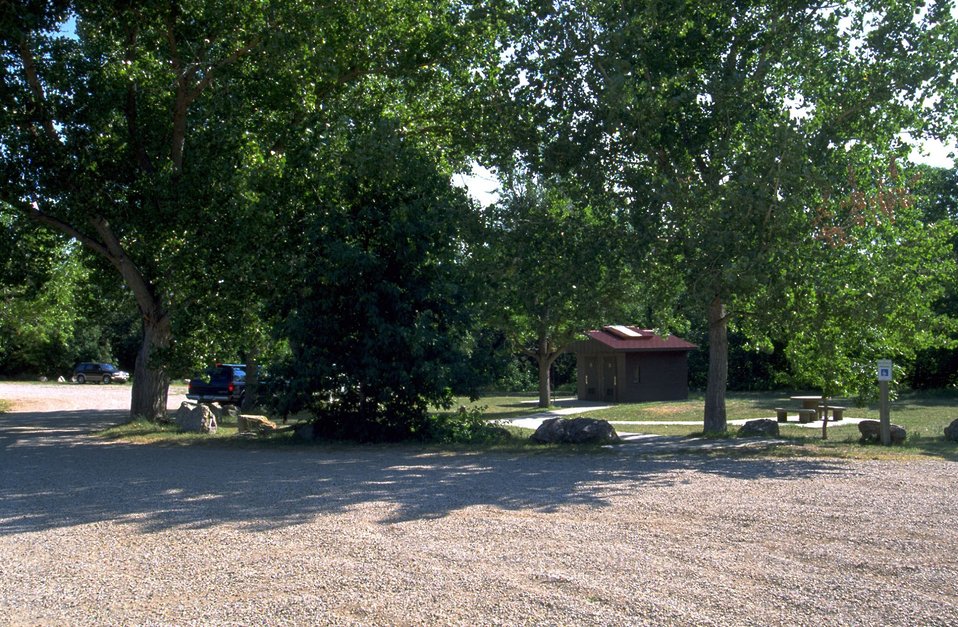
Rest Area at Alkali Creek Trailhead